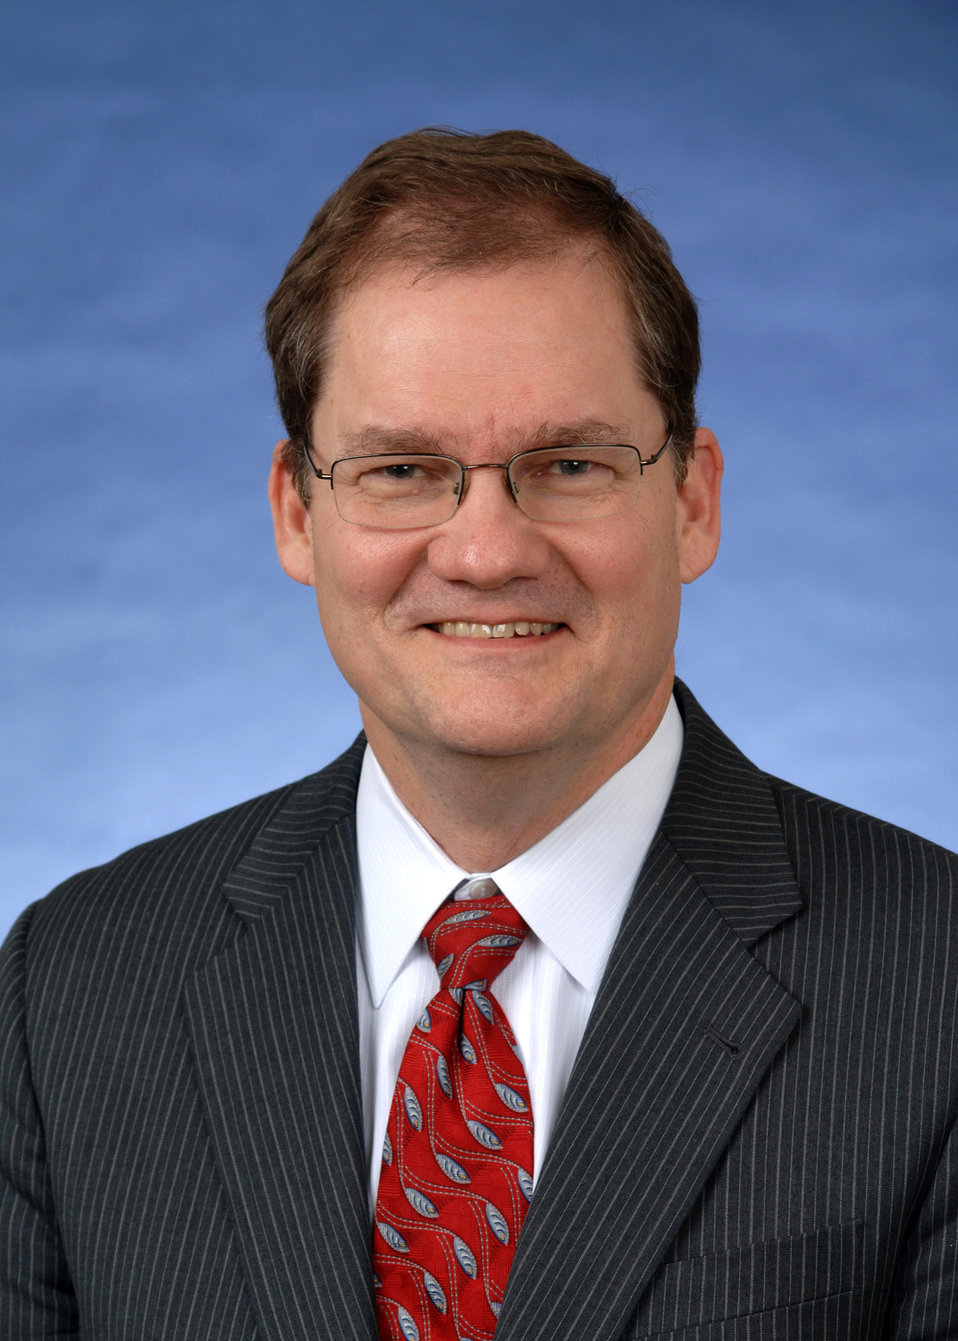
Charles Romine

Charles H. Romine, new director of the NIST Information Technology Laboratory.